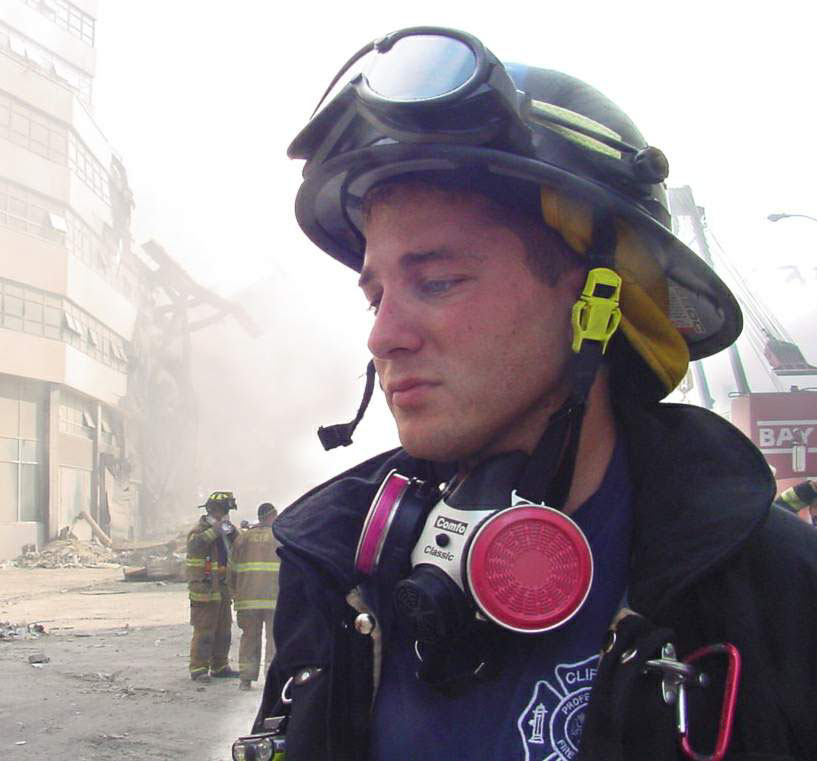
Recovery Efforts

NEW YORK -- Staff Sgt. Anthony Latona, a New York Air National Guardsman and New Jersey firefighter, awaits the order to enter the rubble of the North Tower of the World Trade Center during survivor recovery efforts after Sept. 11. Latona is a member of the 105th Civil Engineering Squadron at Stewart International Airport in Newburgh, N.Y.